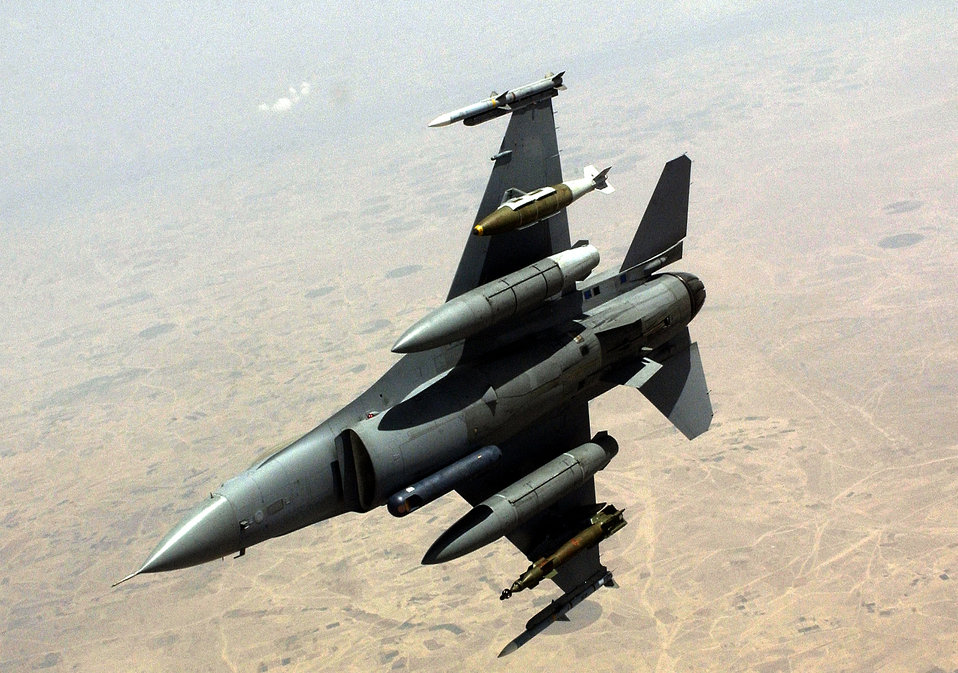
One billionth

SOUTHWEST ASIA -- An F-16 Fighting Falcon from the 555th Fighter Squadron at Aviano Air Base, Italy, banks right after refueling from a KC-135 Stratotanker on April 21 following an aerial refueling. The F-16 received the 1 billionth pound of fuel from Combined Forces Air Component Command refuelers since Jan. 30, 2003.